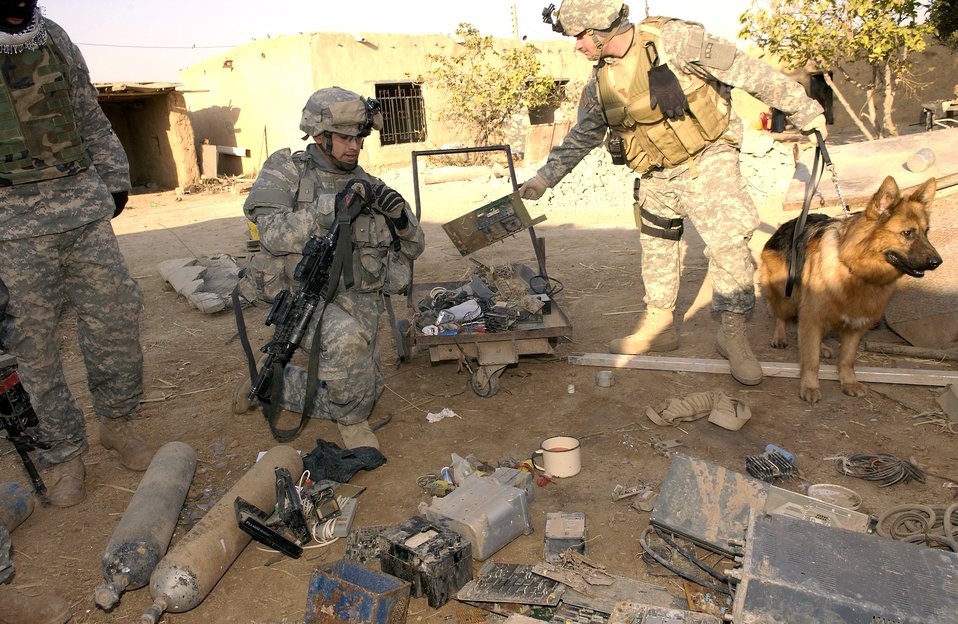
Sniffing out trouble

Army Pfc. Samuel Medrano and Air Force Staff Sgt. Russell McLaughlin load up materials for making improvised explosive devices found Dec. 8 in the village of Tall Qabb, Kirkuk Province. Private Medrano is from Alpha Company, 2nd Battalion, 35th Infantry Regiment, 25th Infantry Division, and Sergeant McLauglin is a K-9 dog handler attached to the 25th Infantry Division.